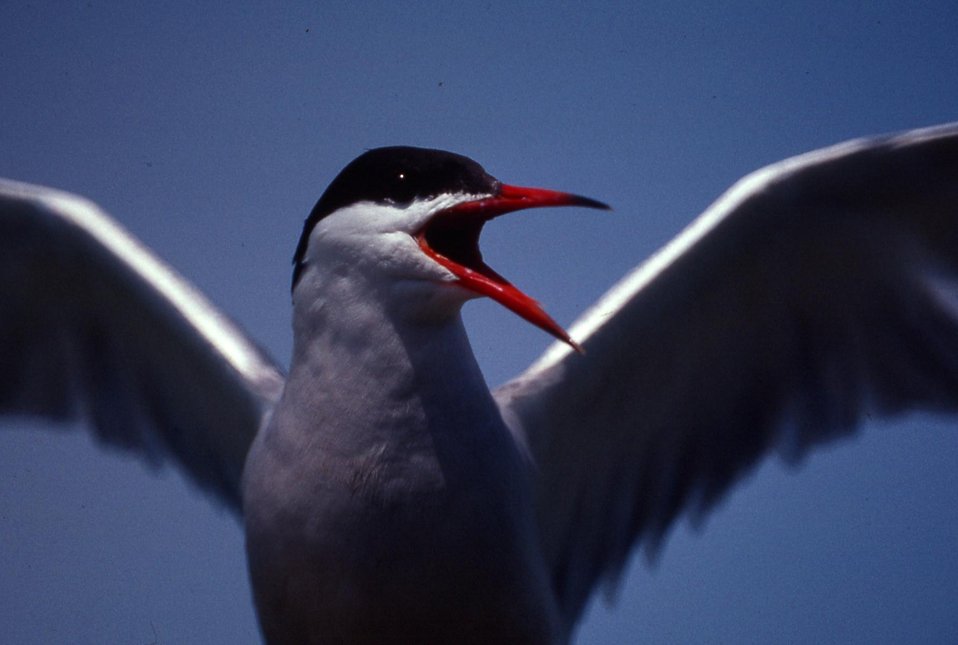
Common tern angry at Maine Coastal Island National Wildlife Refuge